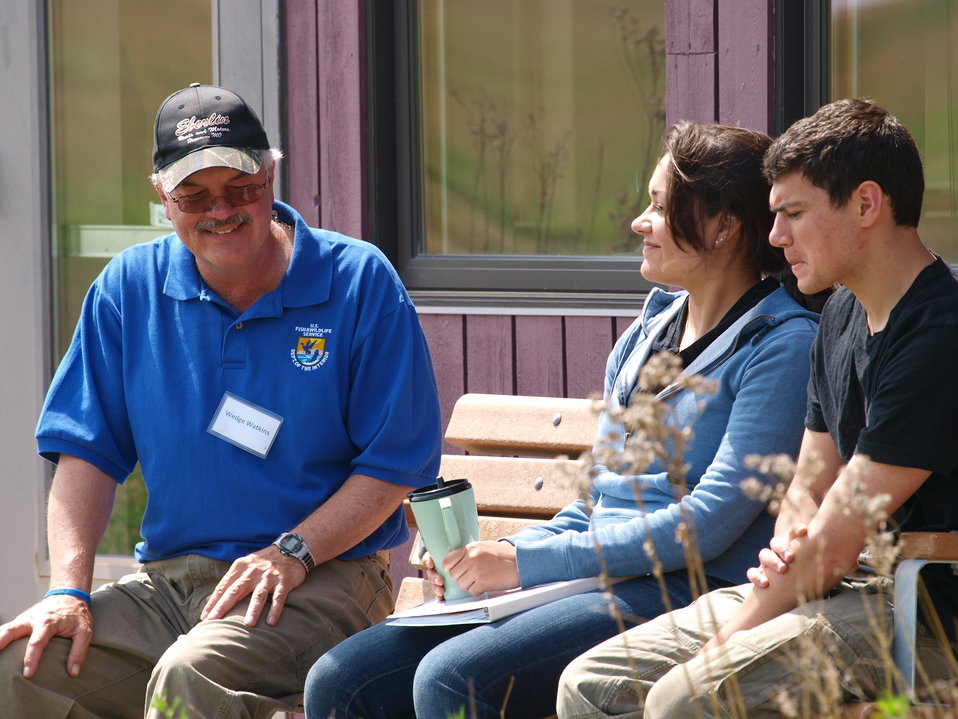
CDIP 2012 Fergus Falls

Wedge and mentees - Marina and Alex